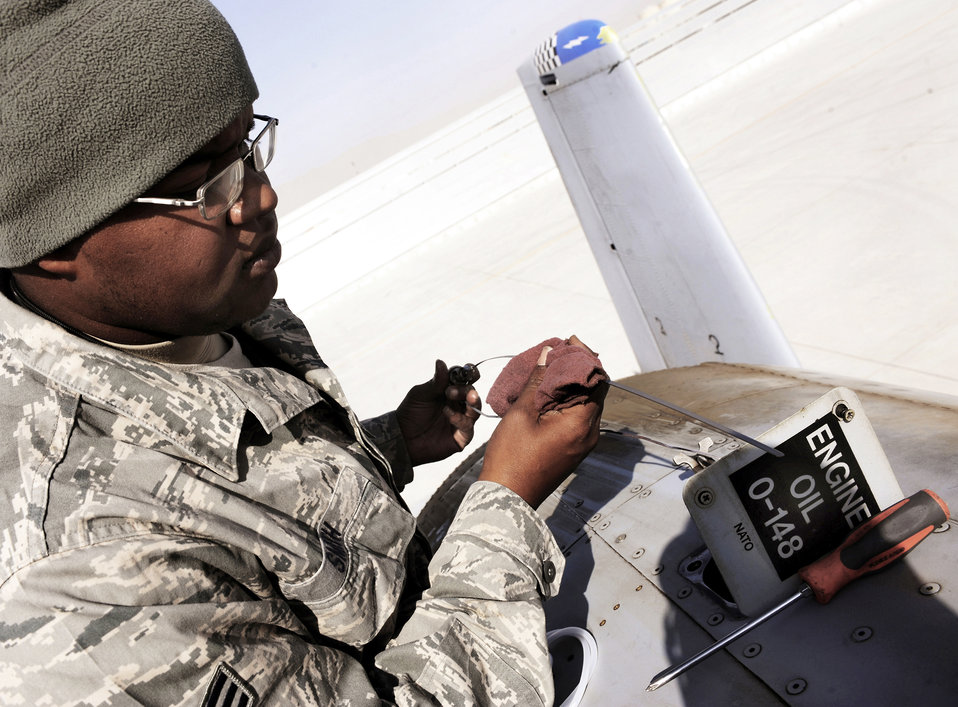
A-10C Thunderbolt II maintenance inspection

Senior Airman Christopher Smith checks the engine oil for an A-10C Thunderbolt II, Jan. 11, 2011, at Kandahar Airfield, Afghanistan. Airman Smith is a crew chief assigned to the 451st Expeditionary Aircraft Maintenance Squadron.